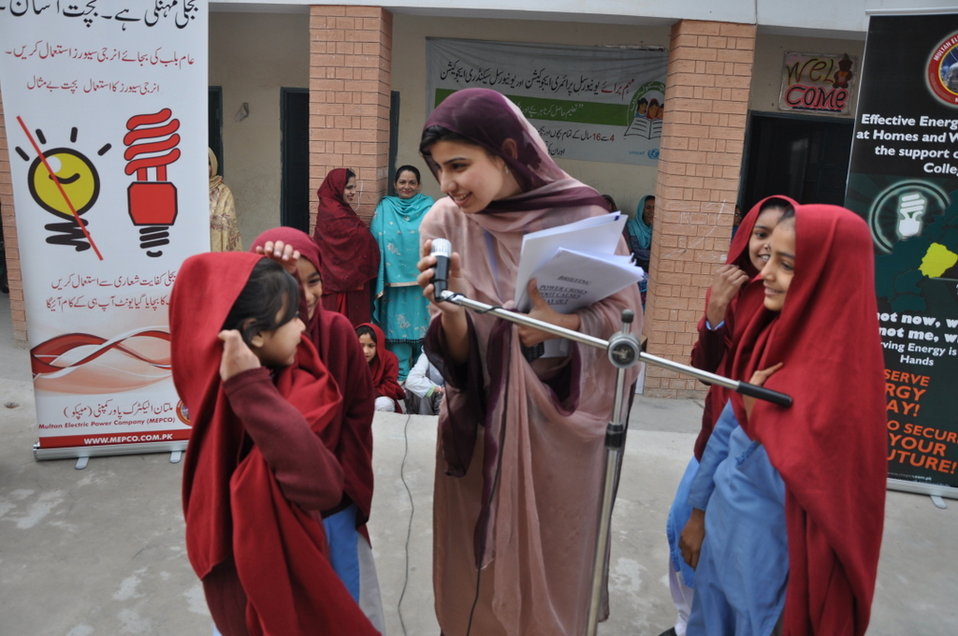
USAID Power Distribution Program-Energy Conservation Seminar at Govt.Girls High School Chah Bohar Wala, Multan

Multan, January 30, 2013 - the USAID Power Distribution Program with the collaboration of MEPCO , held an Energy Conservation Seminar at Govt.Girls High School ,Chah Bohar Wala Multan.More than 2000 students attended the seminar & excitedly participated in the in quiz session.